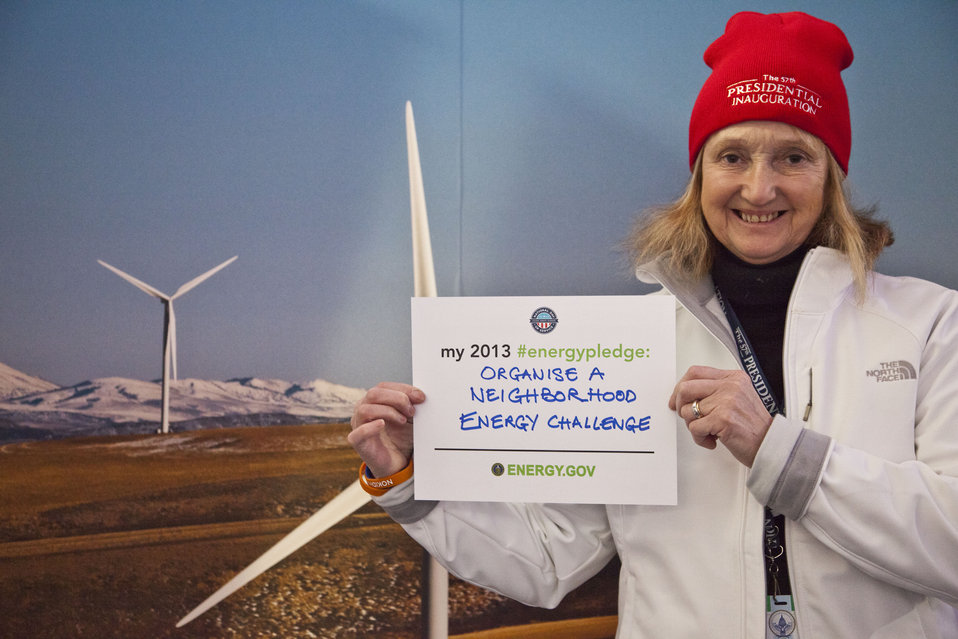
What's your #energypledge?